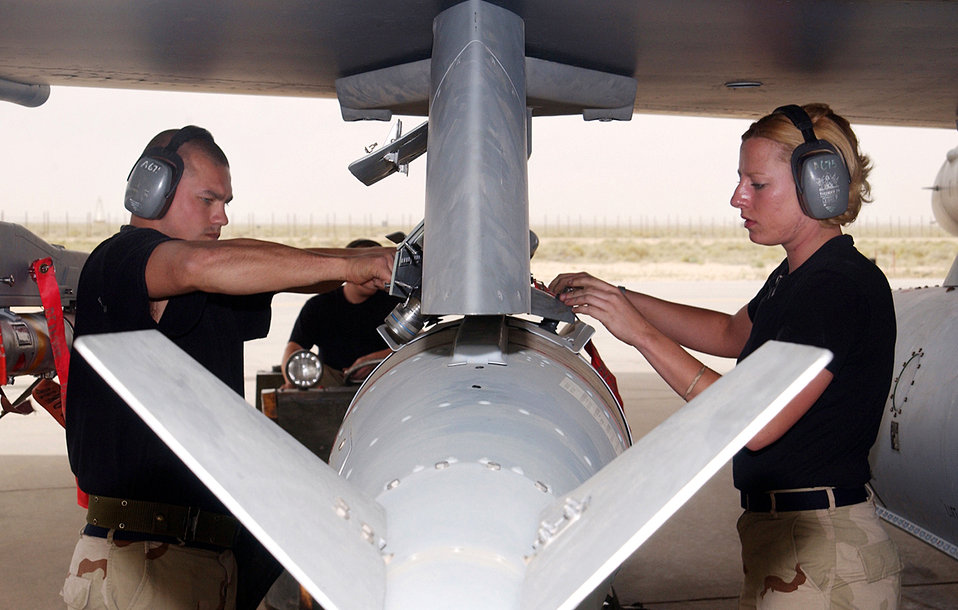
JDAM load

OPERATION IRAQI FREEDOM -- Staff Sgt. Mike Amado and Airman 1st Class Stacy Brenenstall load a joint direct attack munition onto an F-16 Fighting Falcon at a desert air base. Both airmen are members of the 332nd Expeditionary Aircraft Maintenance Squadron.